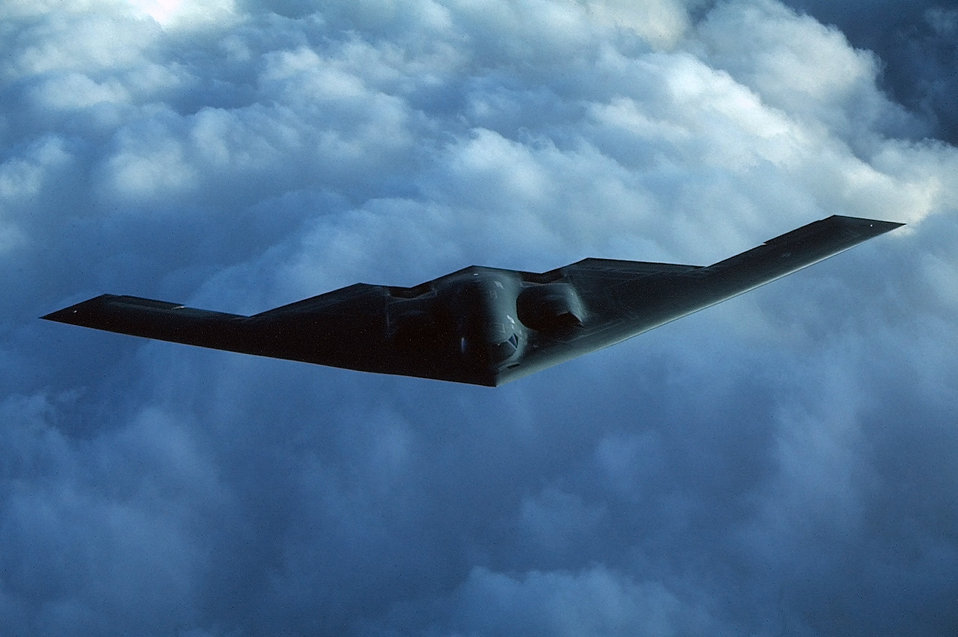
Spirit in the blue sky

FILE PHOTO -- The B-2 Spirit is a multi-role bomber capable of delivering both conventional and nuclear munitions. A dramatic leap forward in technology, the bomber represents a major milestone in the U.S. bomber modernization program. The B-2 brings massive firepower to bear, in a short time, anywhere on the globe through previously impenetrable defenses. Along with the B-52 and B-1B, the B-2 provides the penetrating flexibility and effectiveness inherent in manned bombers. Its low-observable, or